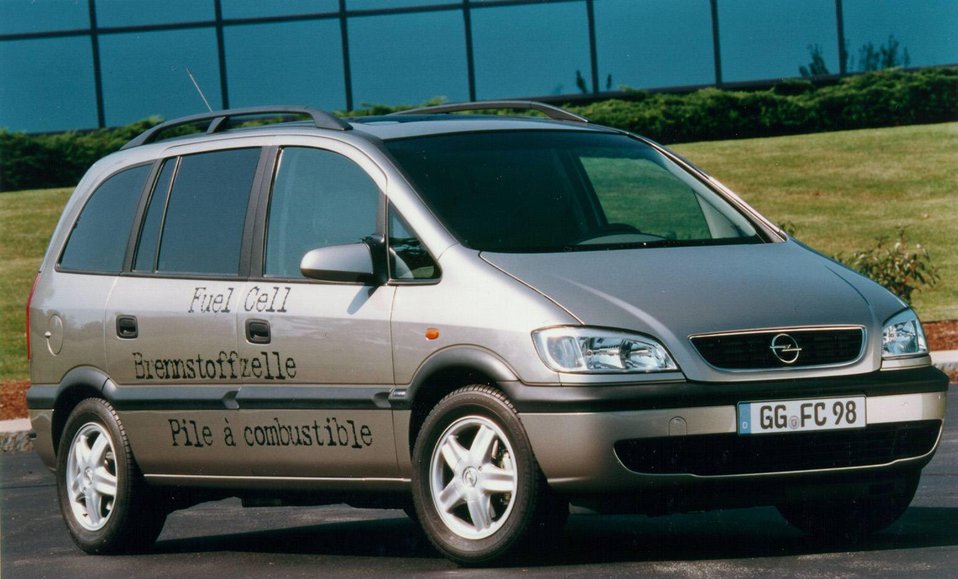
GENERAL MOTOR'S HYDROGEN 1 IS A FUEL CELL TEST VEHICLE BASED ON THE ZAFIRA COMPACT VAN.